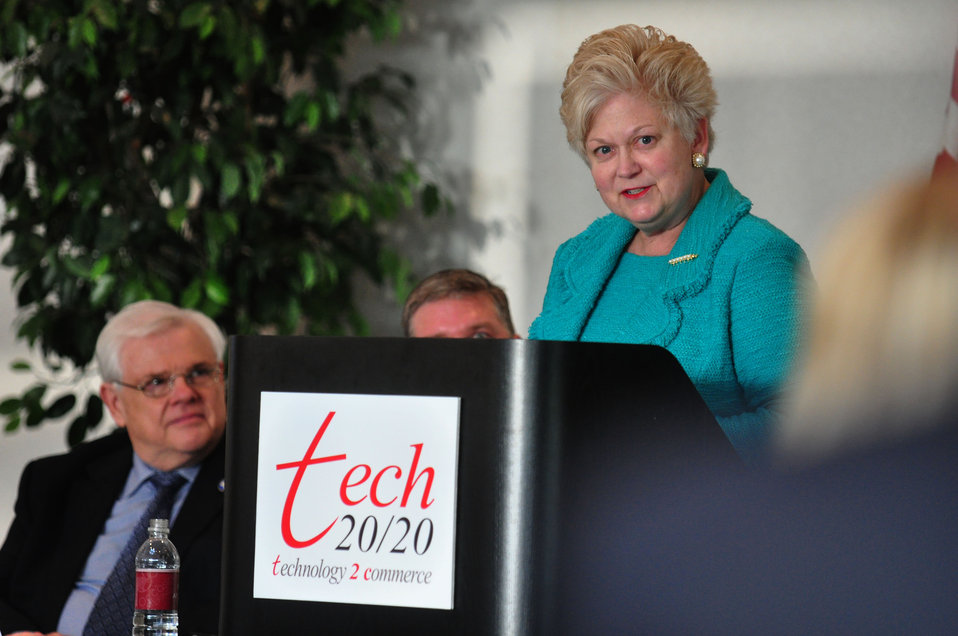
Tennessee Valley Corridor Summit Oak Ridge

13-062 DOE photo Lynn Freeny 5-29-2013 Oak Ridge Tennessee